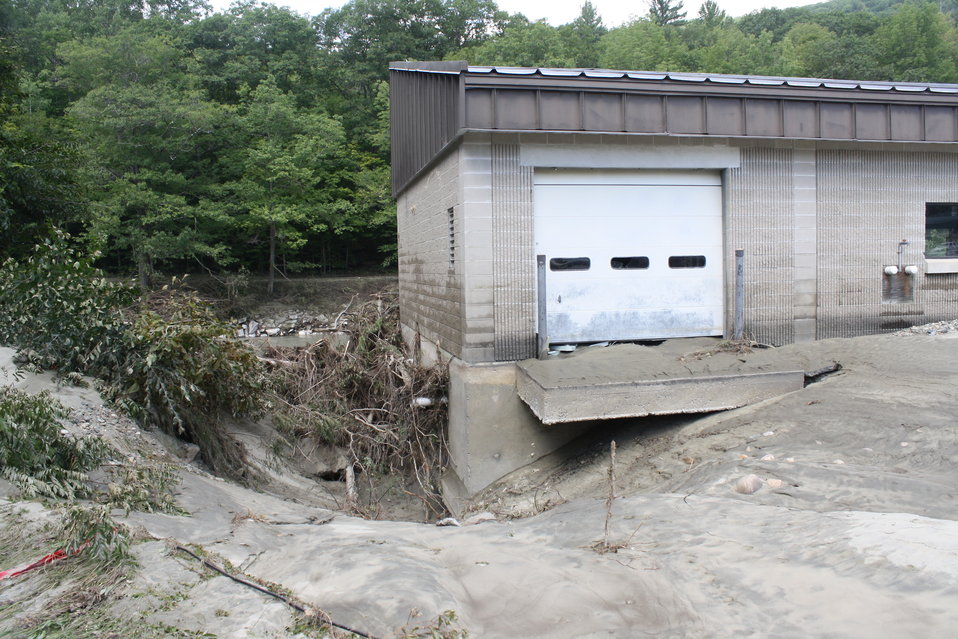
White River National Fish Hatchery facilities and roads were damaged

Quickly rising flood waters and sediment and debris carried by the White River damaged roads, facilities and equipment on White River National Fish Hatchery.